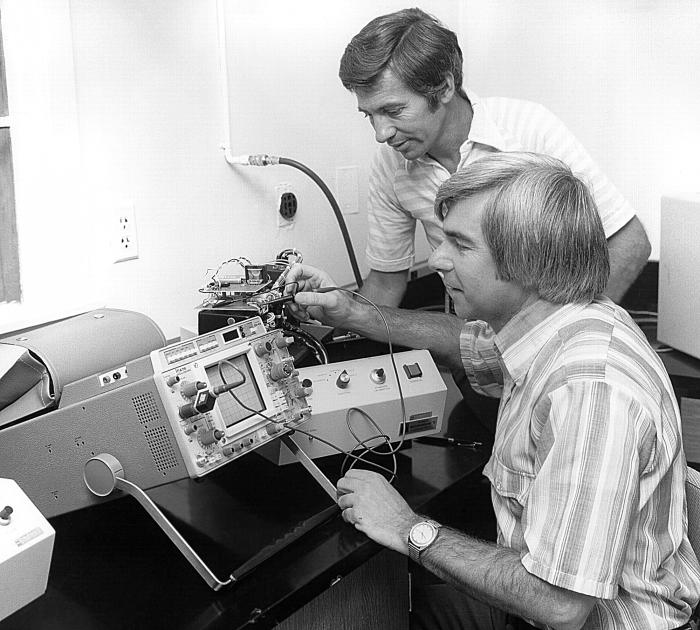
These two technicians are shown at work in a laboratory at the Centers for Disease Control.